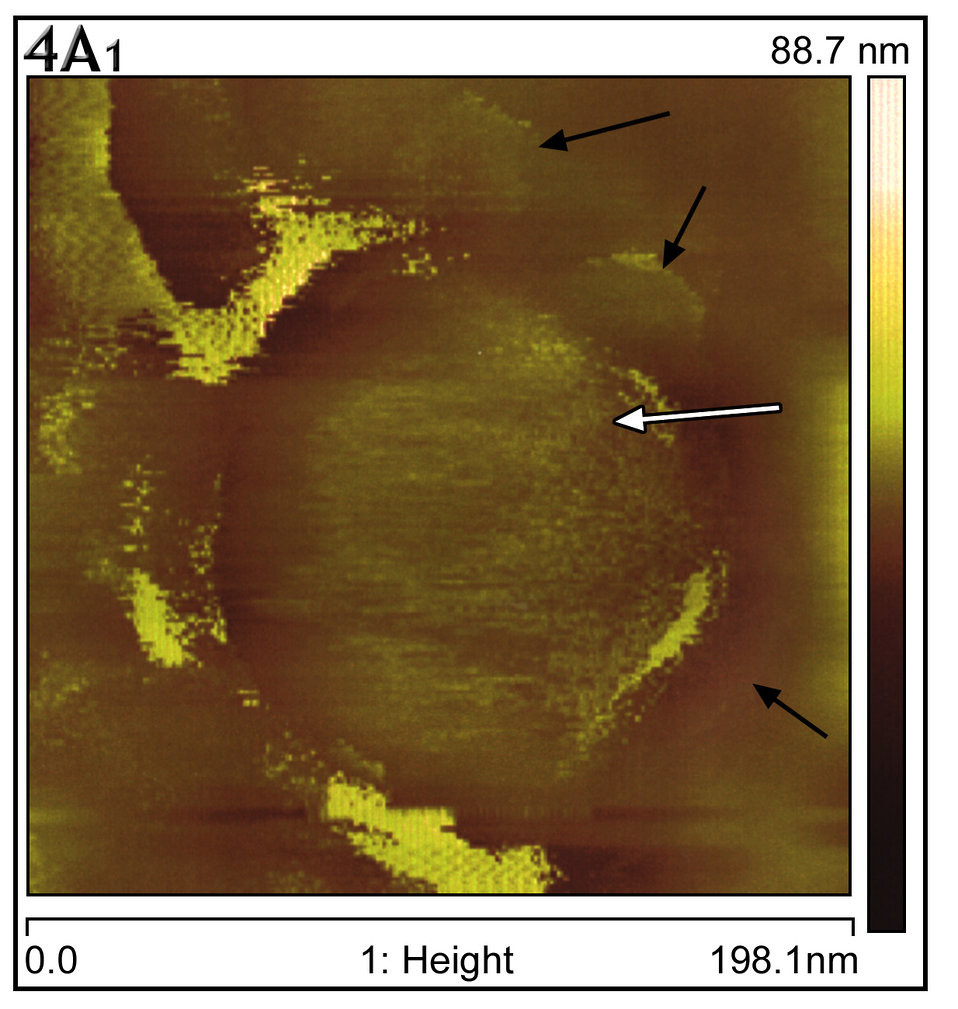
Atomic force microscopy captured the act of virus particle extrusion from a Vero E6 culture cell's surface 15hrs post-infection.